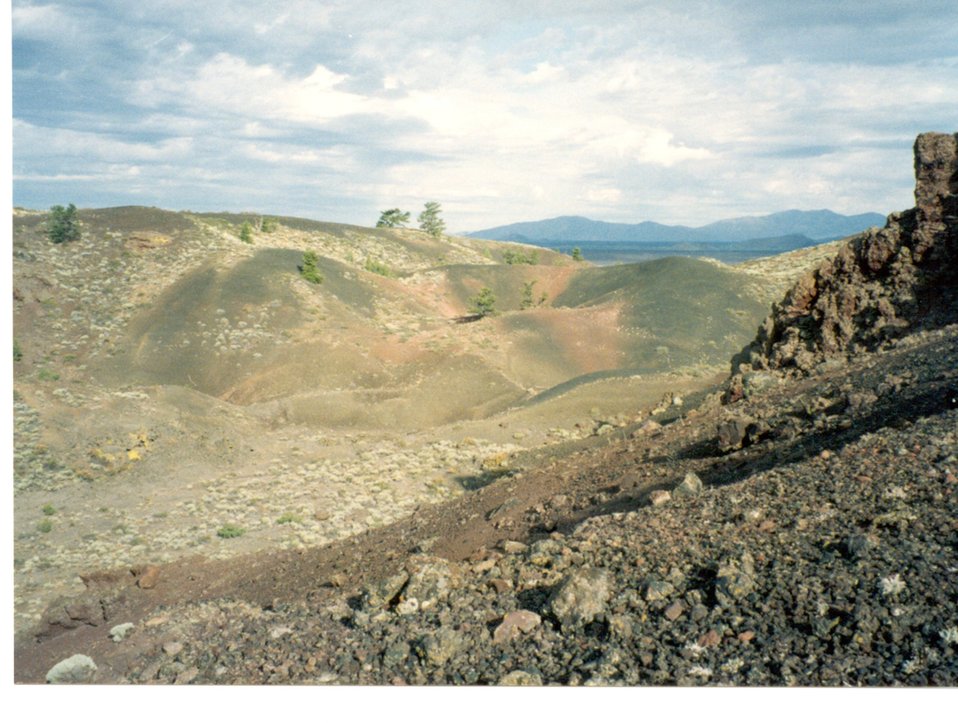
Craters of the Moon Shoshone Field Office USRD Upper Snake River District